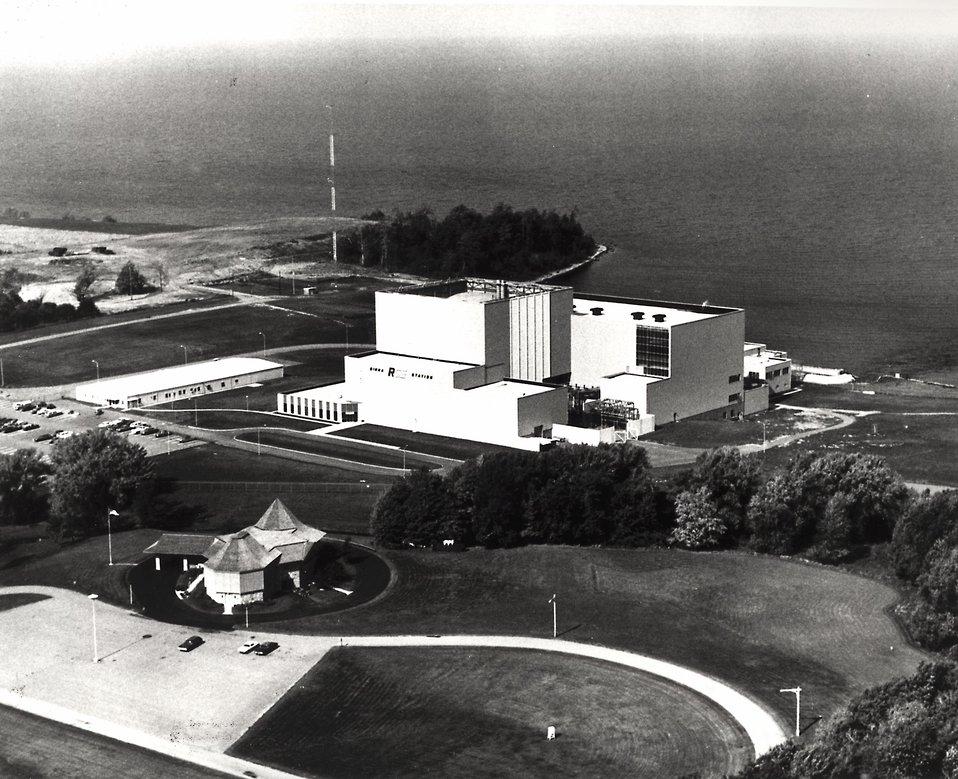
View of the Robert Emmett Ginna Nuclear Power Plant on the south shore of Lake Ontario at Ontario, New York. Circa 1974.